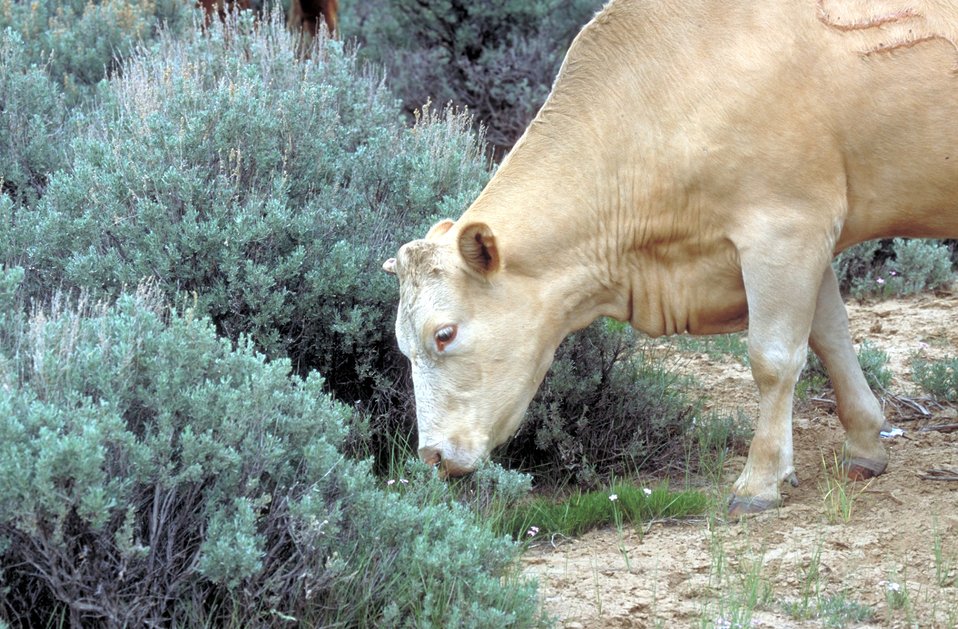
Livestock grazing on BLM lands near Price, Utah.